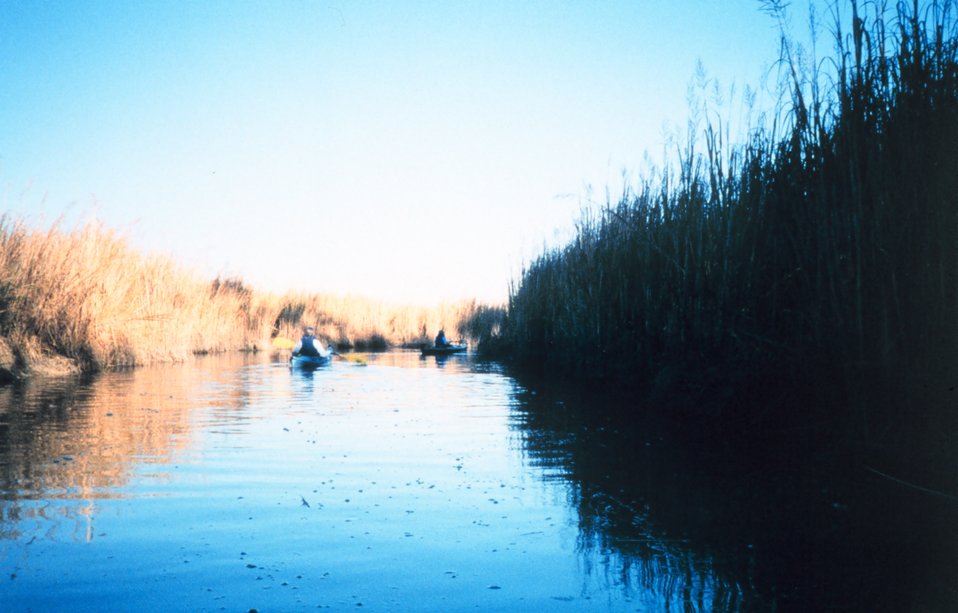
Kayakers observing the marsh flora and fauna on a fall afternoon.